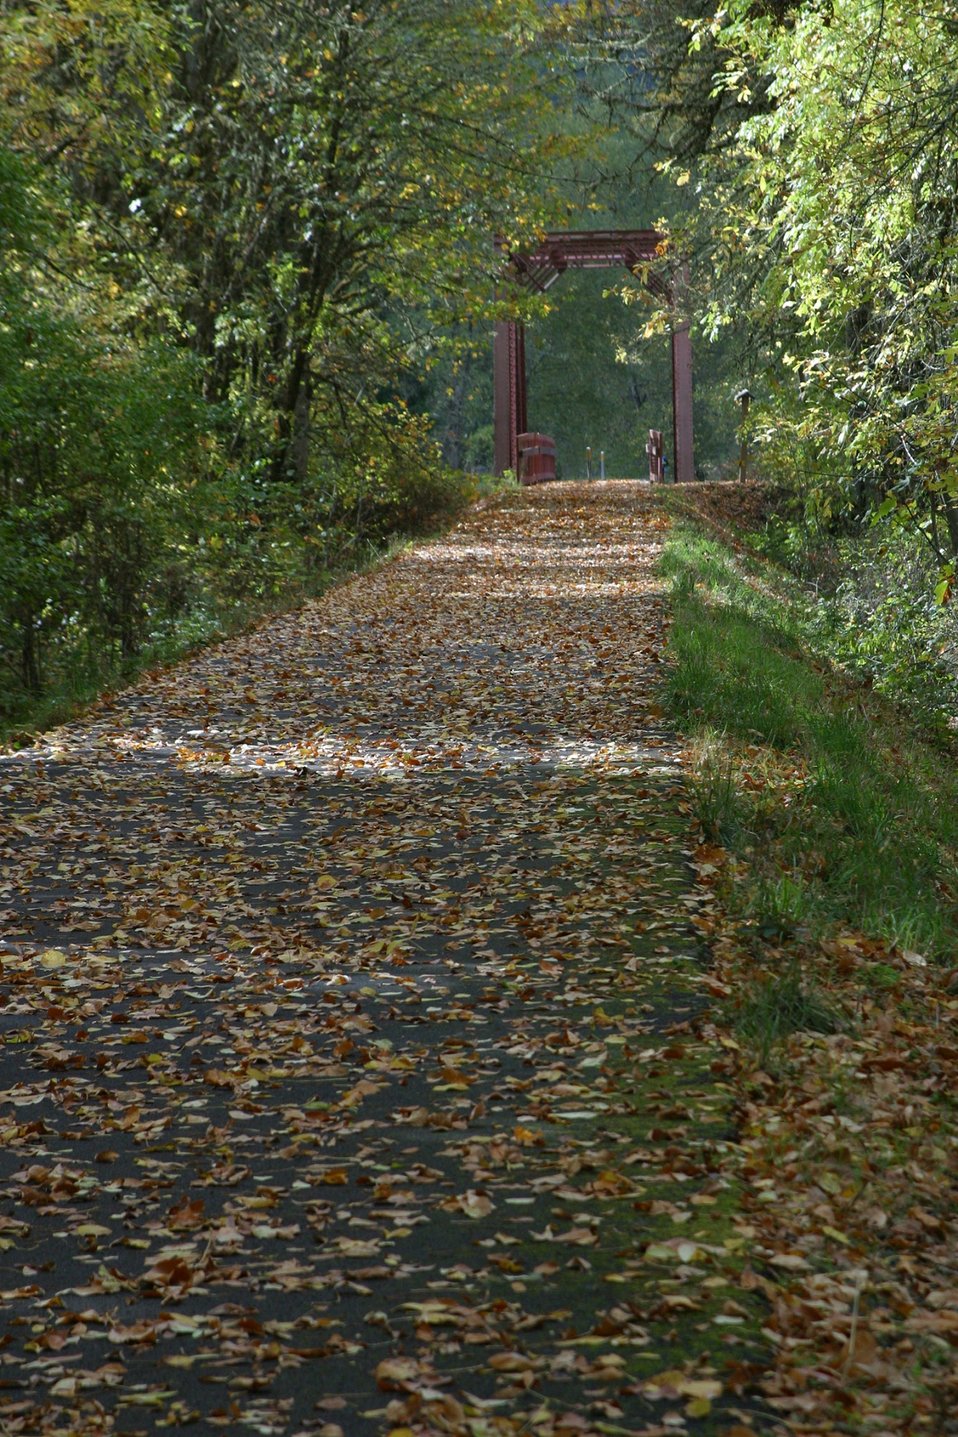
The the 15.6 mile Row River Trail trail not only attracts mountain bicyclists and horseback riders, but also road bicyclists and even a few in-line skaters.